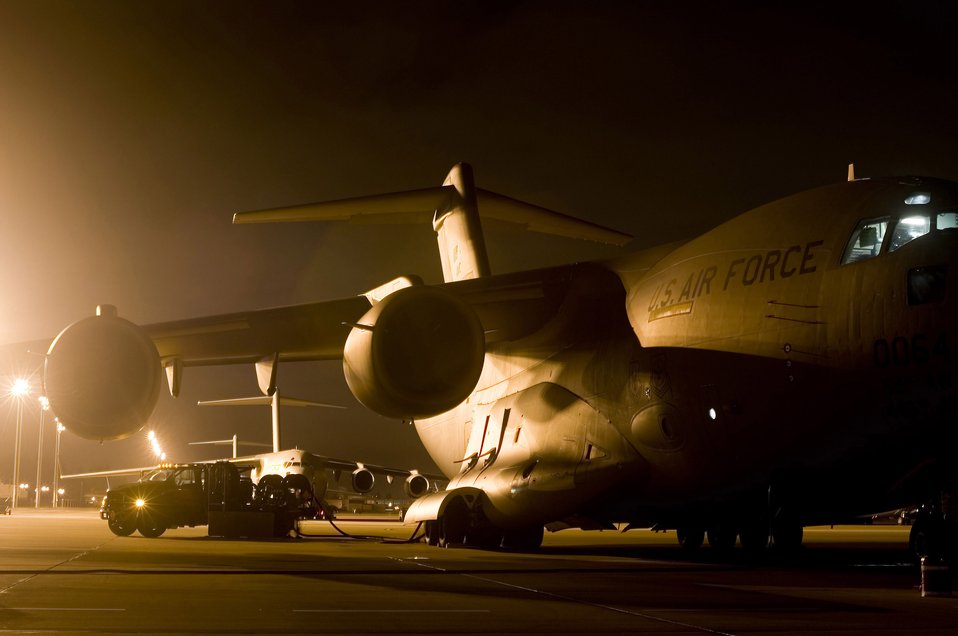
Gas and go

After a routine mission, Airmen refuel a C-17 Globemaster III on the flightline Dec. 3 at McChord Air Force Base, Wash.